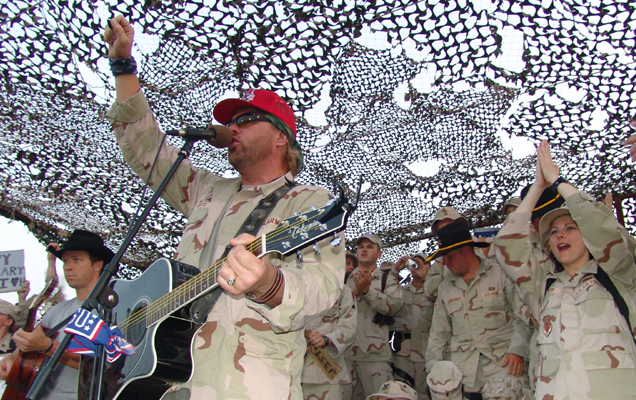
USO brings taste of America to troops

BAGHDAD, Iraq - Country music star Toby Keith performs in a makeshift outdoor auditorium as troops enjoy a break from deployed life May 17.